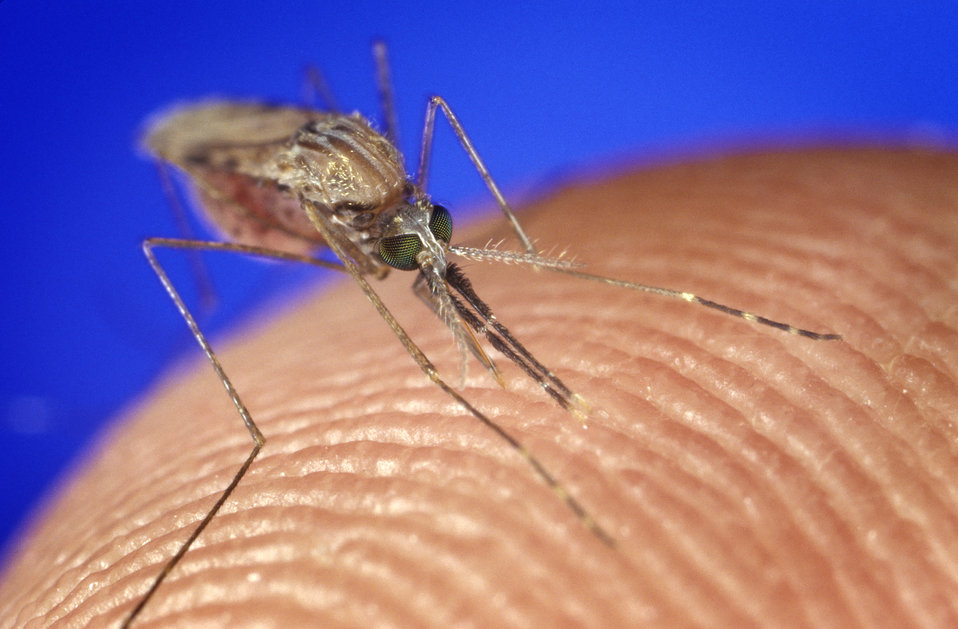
Anopheles gambiae.